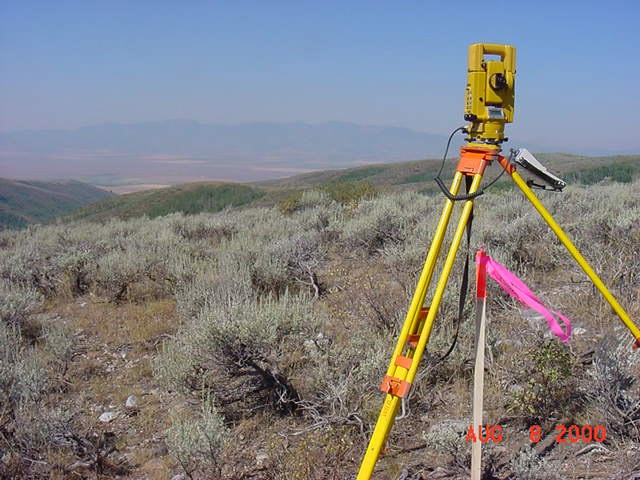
Cadastral Surveys Idaho Bureau of Land Management